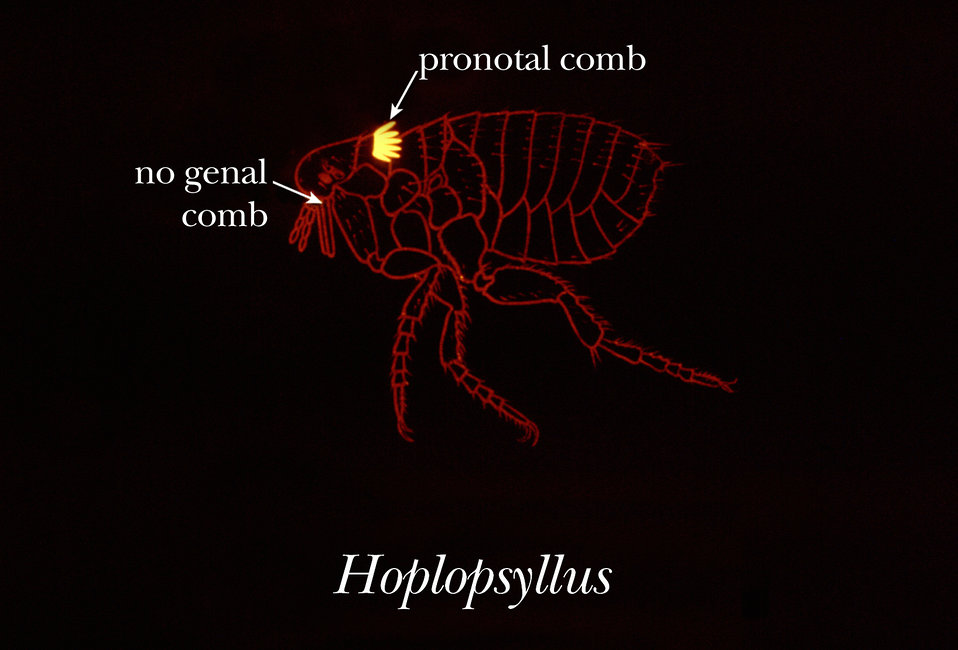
This image reveals anatomic features found in the head region of fleas in the genus Hoplopsyllus.